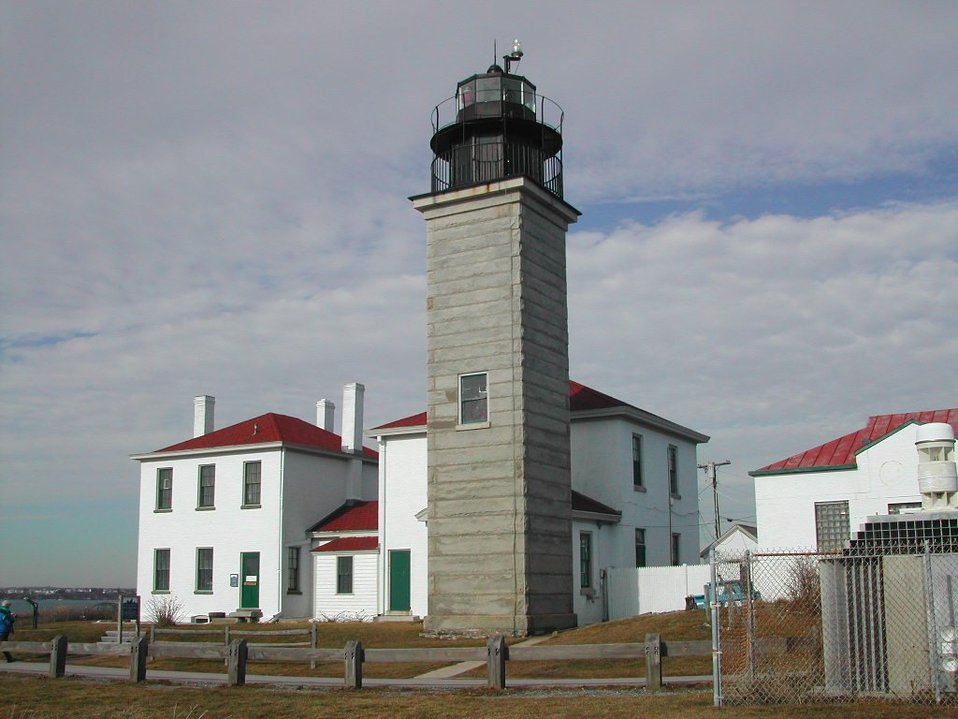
Beaver Tail Light